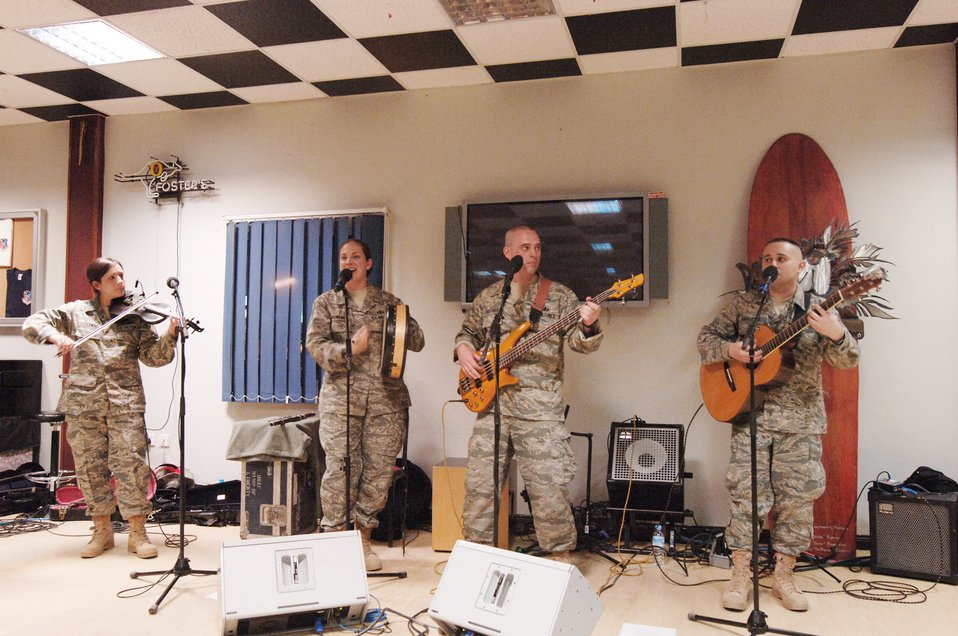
'Celtic Aire' performs in Southwest Asia

The U.S. Air Forces Central band, Celtic Aire, performs for servicemembers at an air base in Southwest Asia Jan. 7, 2010. Band members are (from left) Tech. Sgt. Emily Lewis, violinist/vocalist, Tech. Sgt Julia Brundage, vocalist/drums, Master Sgt. Eric Sullivan, guitarist/vocalist, and Tech. Sgt. Joseph Haughton, guitarist/vocalist.